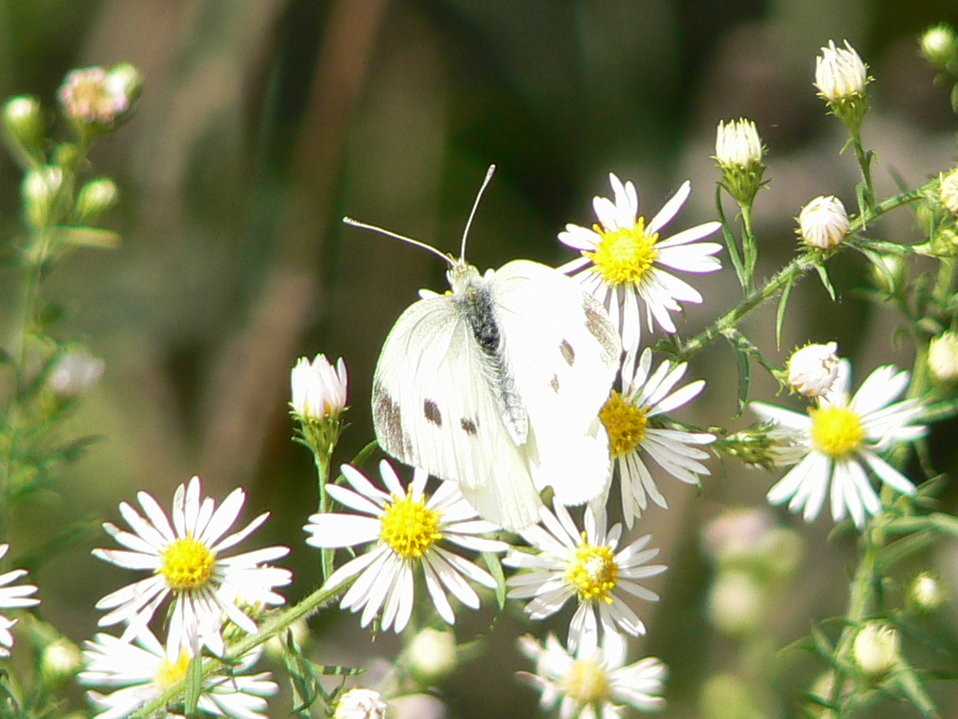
Cabbage butterfly on flower.